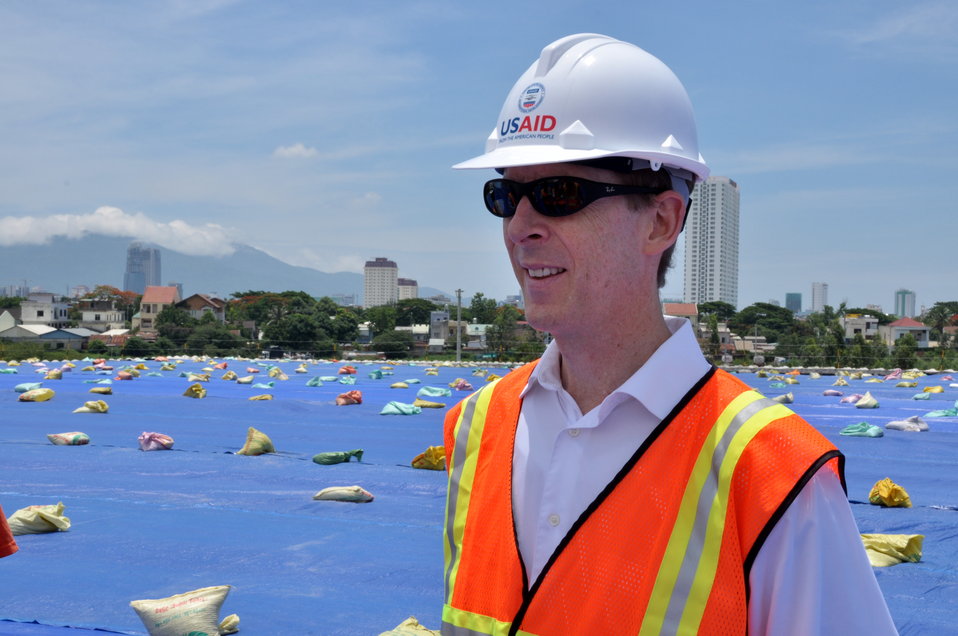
USAID Dioxin Contamination Project Progress

USAID Mission Director Joakim Parker assesses progress at the Environmental Remediation of Dioxin Contamination Project at Danang Airport

July 16, 2013